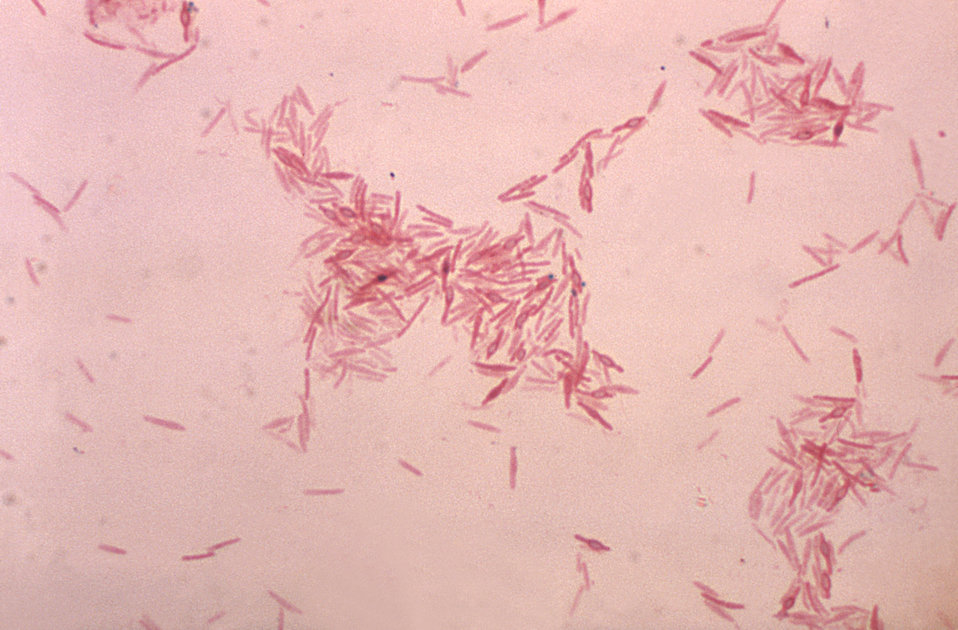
Bacillus alvei. Gram stain.